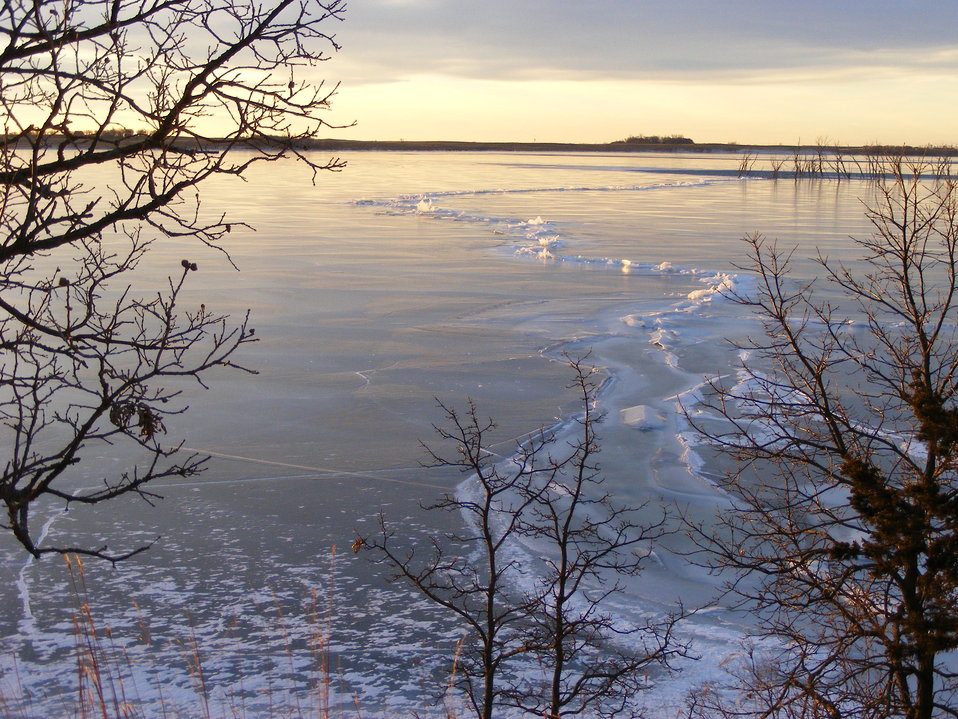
Morning Ice

The morning sun highlights the ice outside Headquarters at Waubay National Wildlife Refuge in South Dakota.

Credit: Laura Hubers / USFWS

Photo Contest Entry #160